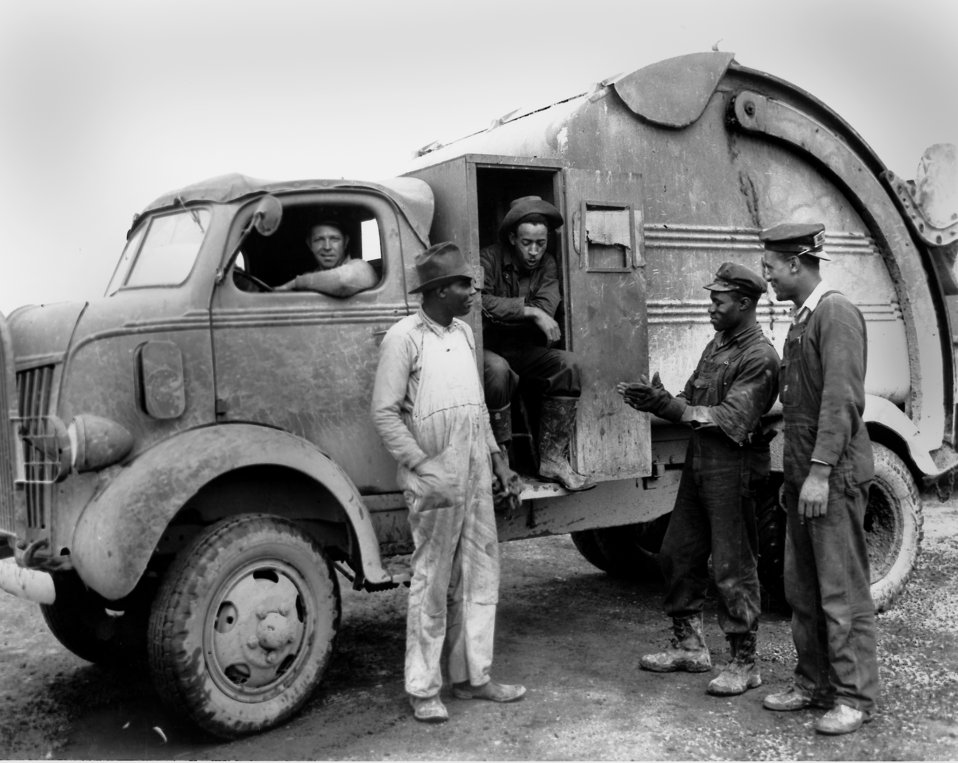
Garbage collection Oak Ridge

Pro884-4 DOE photo by Ed Westcott
Garbage collection Oak Ridge Tennessee 7/1945